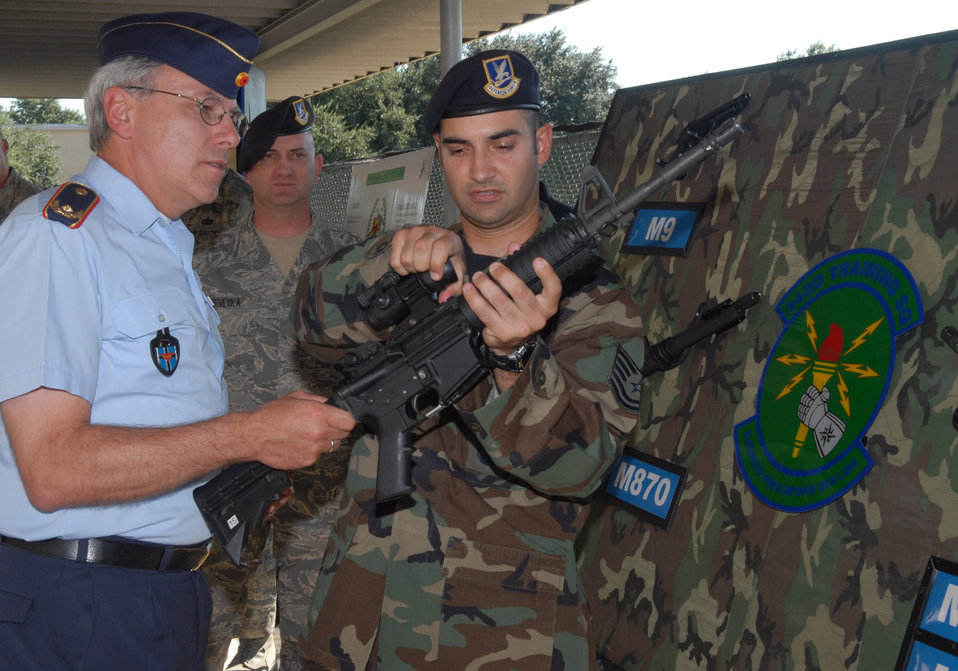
German general strengthens partnership with U.S.

Tech. Sgt. Ian Mirkes shows German air force Brig. Gen. Gerd Bischof the components of an M-4 rifle during the general's tour Oct. 12 of the 342nd Training Squadron's Combat Arms Training and Maintenance operations at Lackland Air Force Base, Texas.